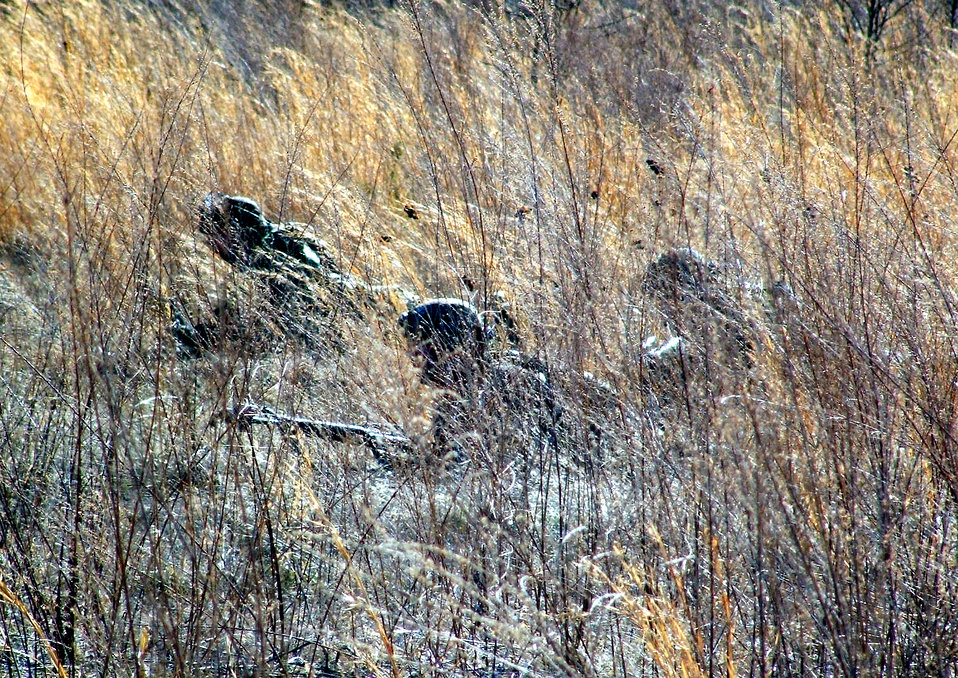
Airmen improve combat tactics

Airmen stay low while engaging